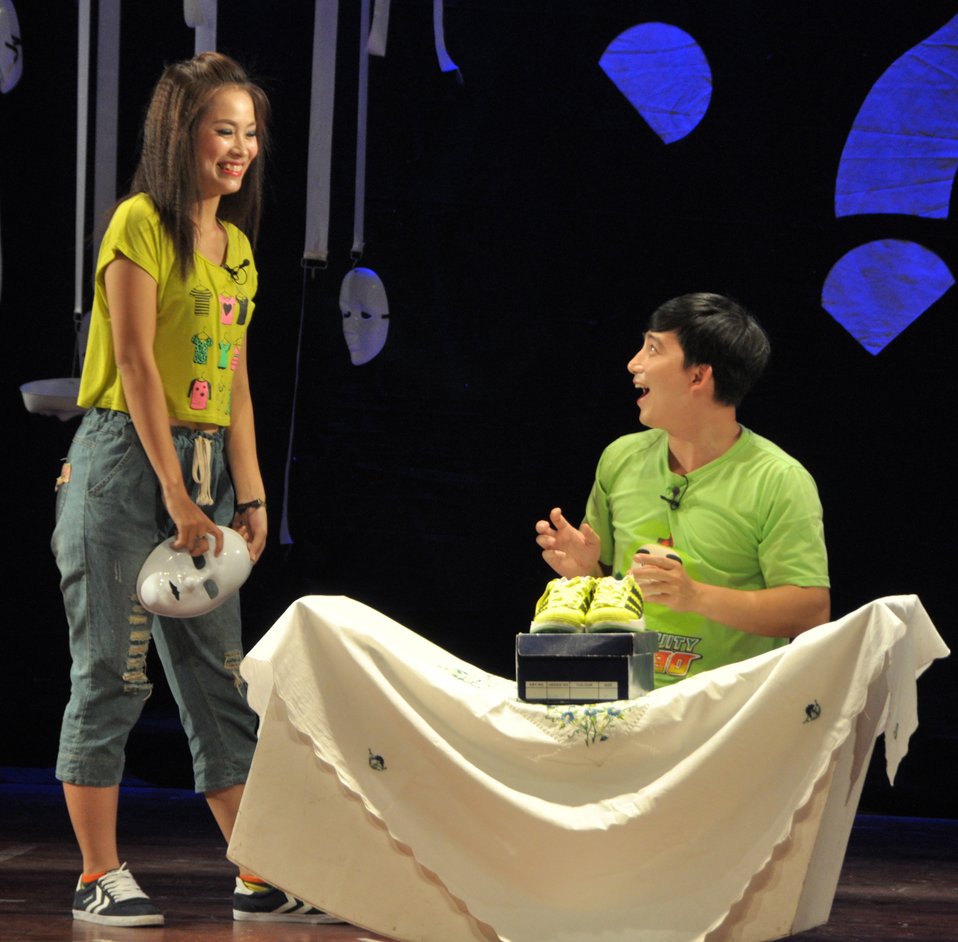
PEPFAR Musical Questions and Exclamations

Hanoi, May 17, 2013